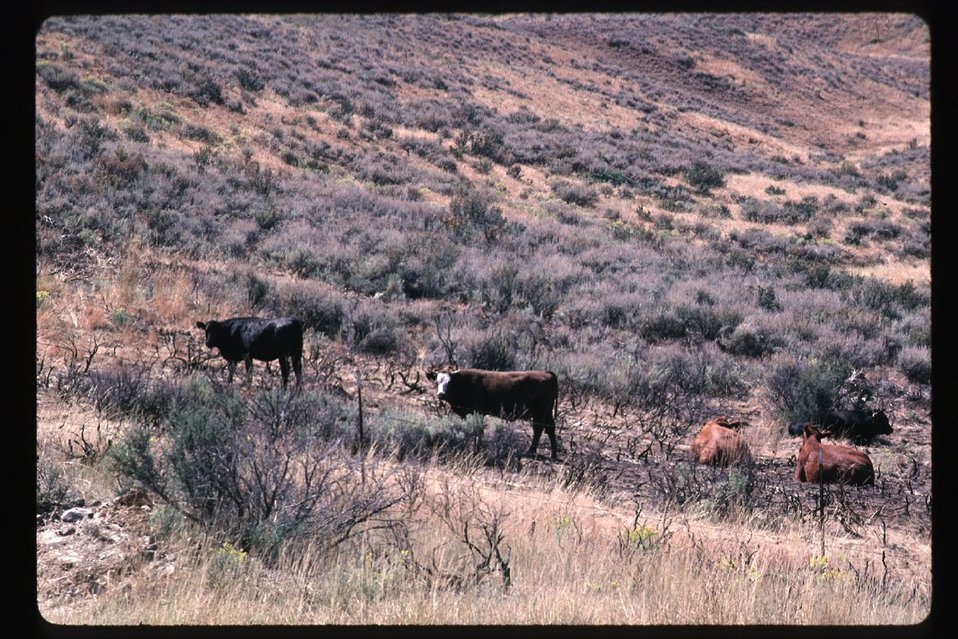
Grazing Cows Rangeland Four Rivers Field Office LSRD Lower Snake River District